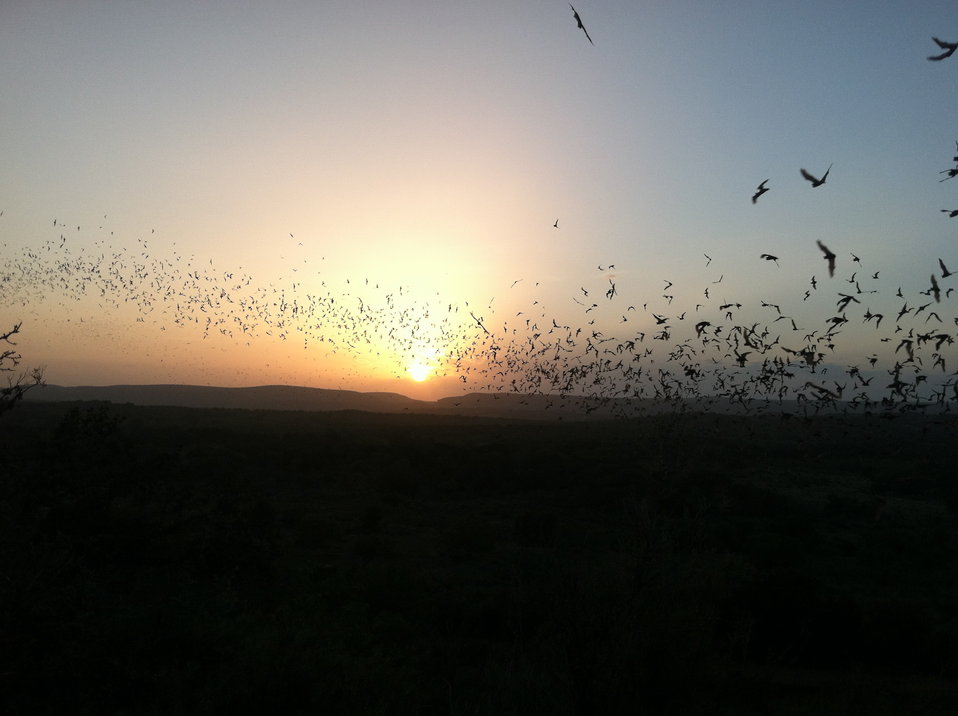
Bats flying into Texas sunset